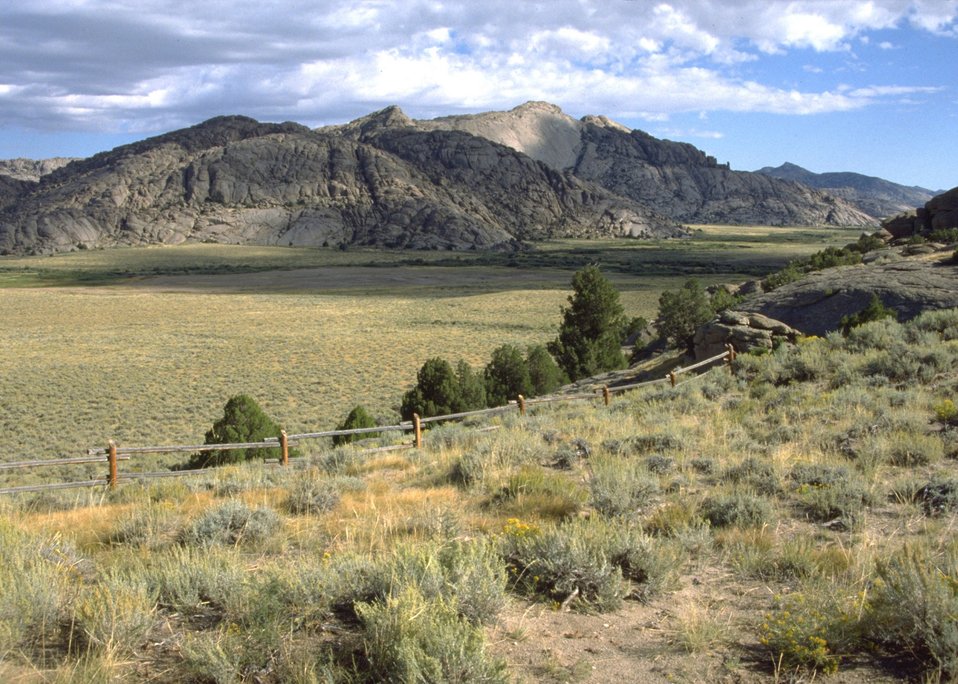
Scenic rock area.